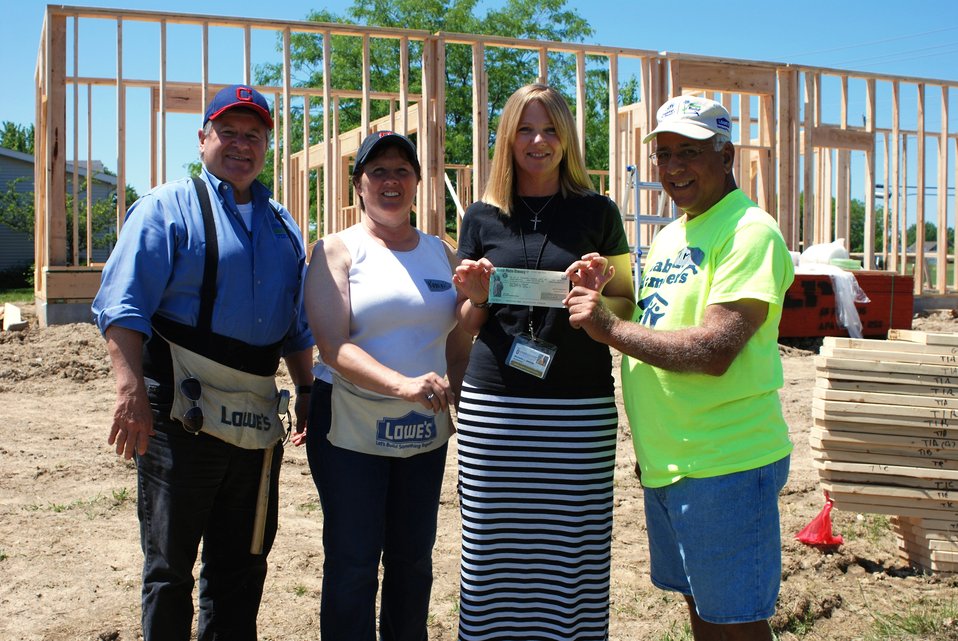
140606 Ohio Habitat Logan Westrick Amrine Jim Cesa

U.S. Department of Agriculture (USDA) Rural Development (RD) Ohio State Director Tony Logan (left) joins USDA RD Loan Underwriter Karen Westrick, homeowner Michelle Amrine and Habitat for Humanity Union County Board President Jim Cesa for a check presentation at the Marysville, OH work site. As part of USDA's ongoing Homeownership Month observance, RD employees spent the day helping frame exterior walls of Amrine's house.